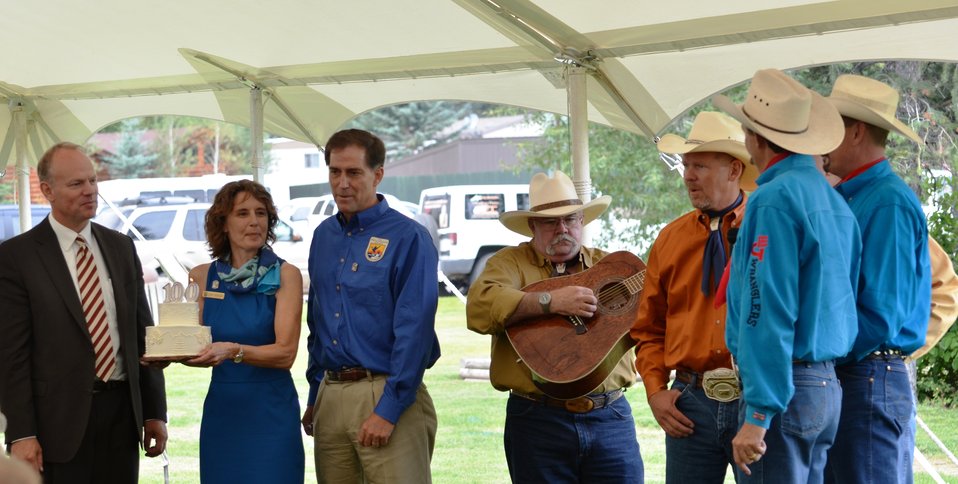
The Bar J Wranglers Lead the Song

The musical group, the Bar J Wranglers, sang the National Anthem at the beginning of the National Elk Refuge's centennial ceremony. Later, they led the audience in the Happy Birthday Song as a cake was carried in. Wyoming Governor Matt Mead and USFWS Director Dan Ashe stood by to blow out the candles at the end of the song.

Credit: USFWS / Bobby Harkey, National Elk Refuge volunteer